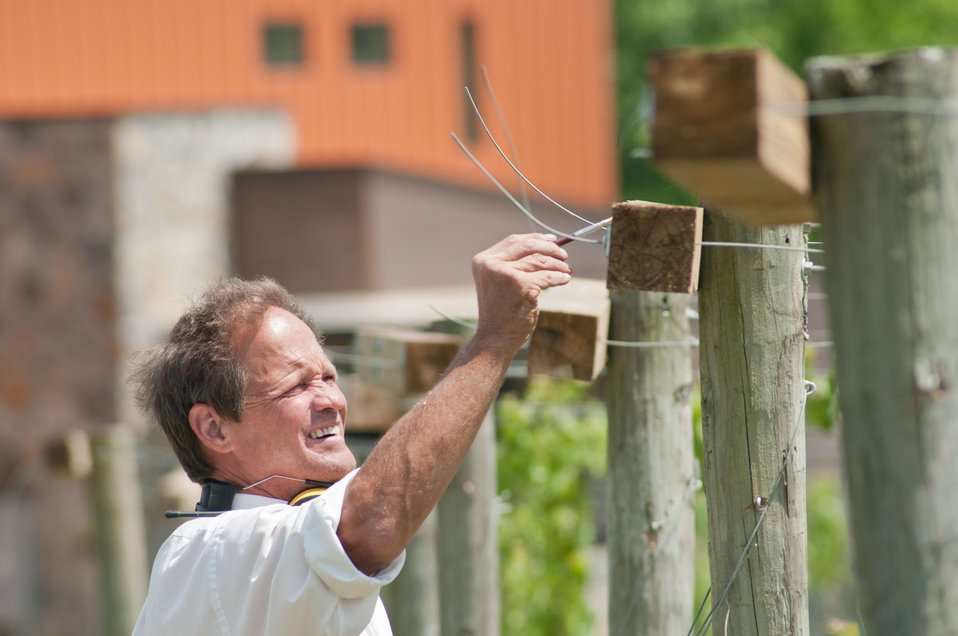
Cooper Vineyards vineyard manager Michael Boone applies identification markings to the rows of grape vines in Louisa, VA, on May 4, 2011, the first winery on the East Coast and the second in the country to be awarded the fourth and highest, Platinum certification by Leadership in Energy and Environmental Design (LEED).
From a Virginia Wine Board Marketing Office press release, “The process of building a LEED platinum certified building was initially more expensive and arduous than co-owners, Jacque Hogge, MD and Geoffrey Cooper, MD expected, but they were able to get financial assistance from the United States Department of Agriculture. “Know that there are grants available to help with the costs of sustainable building projects,” Hogge advises to other potential green wineries. Cooper Vineyards received 2 of the 3 USDA (U.S. Department of Agriculture Rural Development (RD) Rural Energy Financing program) grants awarded in Virginia in 2010 to help with the expenses of their construction.”
Rural Energy Financing program focuses on loan guarantees, loans and grants to agricultural producers, businesses, cooperatives and rural residents for renewable energy systems and to make energy efficiency improvements.
The tasting room and building collects rainwater from the roof; uses low flow water fixtures to reduce usage by 40%; utilizes structurally insulated panels for the roof and walls; heats and cools the entire building using a geothermal system that includes pipes that are embedded in the parking lot; low-voltage LED lighting with daylight and occupancy sensors provide ample light when it is needed; a solar panel array provides more than 15% of the energy needs for the building, and much of the construction materials are from local and recycled material sources. For more information about USDA please go to www.usda.gov, Rural Development and Rural Energy Financing. LEED was developed by the U.S. Green Building Council (USGBC) is a 501 c3 non-profit organization committed to a prosperous and sustainable future for our nation through cost-efficient and energy-saving green buildings.